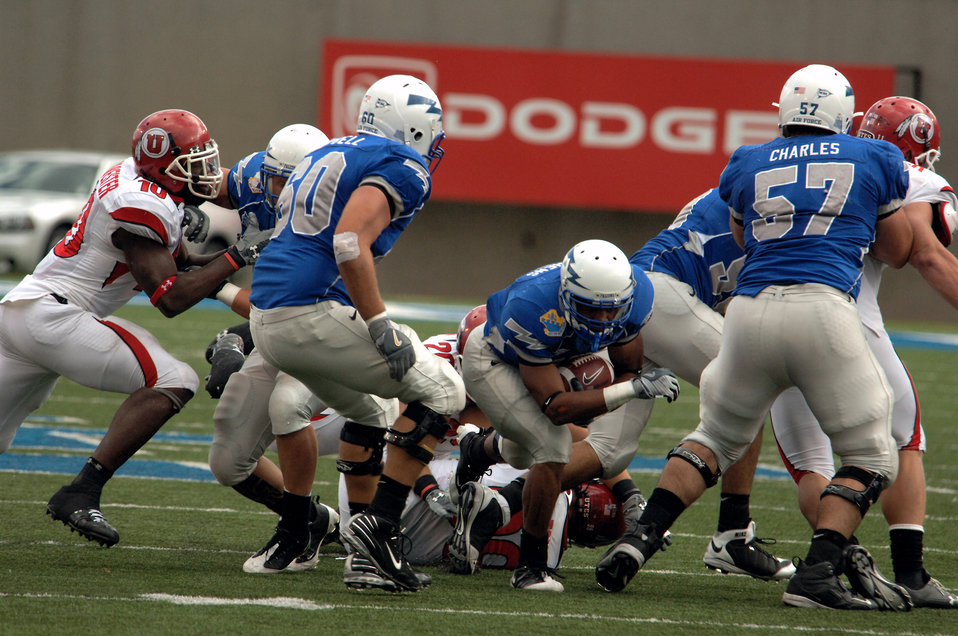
Football: Utah downs Air Force 30-23

U.S. Air Force Academy tailback Savier Stephens dives through a hole opened by the Falcon offensive line, led by tackle Chris Campbell and guard Nick Charles Sept. 20 at the Academy in Colorado. Stephens rushed 13 times for 33 yards in the Falcons 30-23 loss to No. 20 Utah.